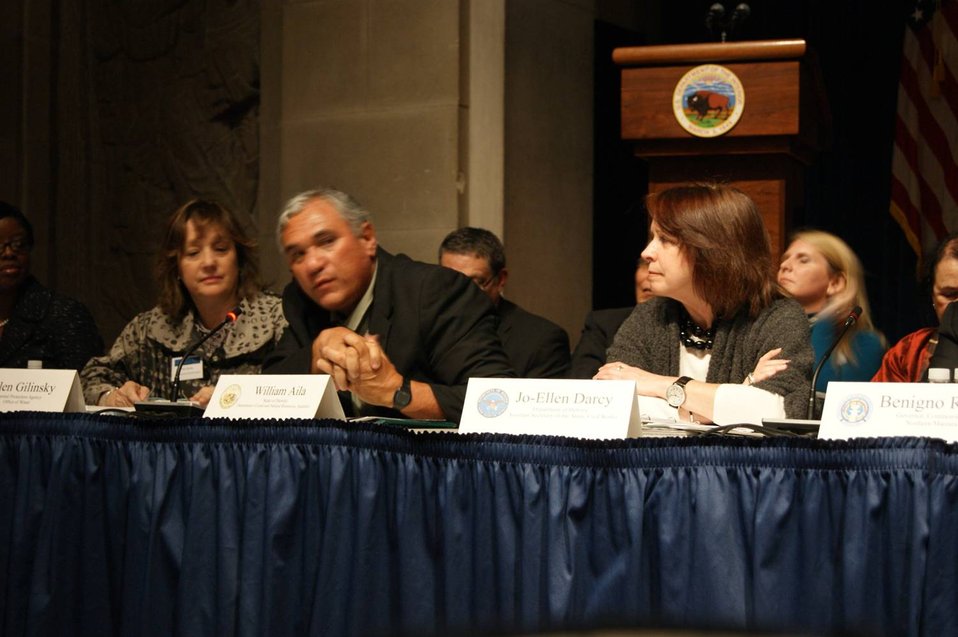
Coral Reef Task Force - Winter Meeting 2012